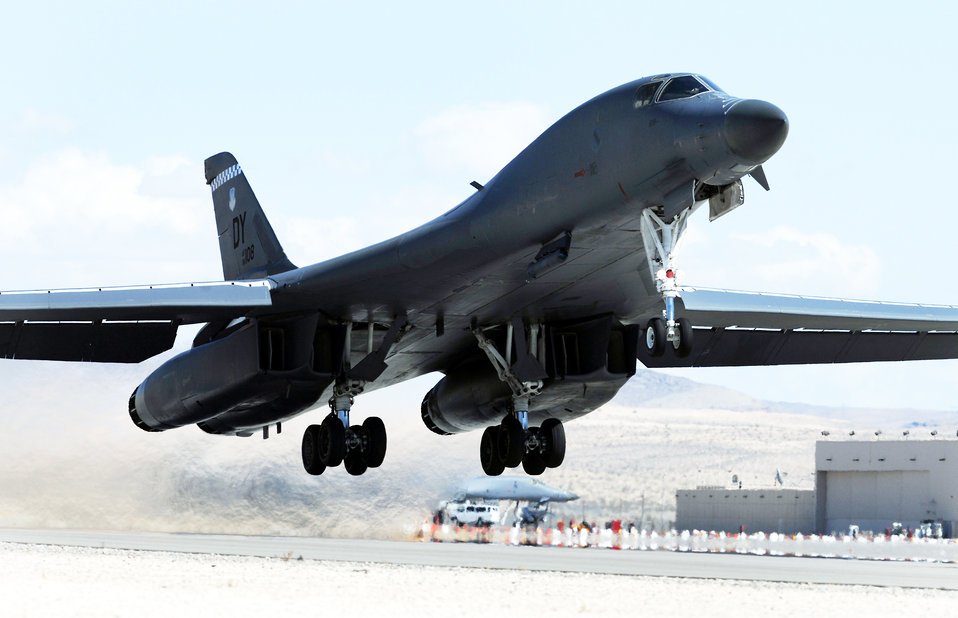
Bombers away

A B-1 Lancer assigned to 7th Operations Group at Dyess Air Force Base, Texas, departs for a training mission March 3, 2010 at Red Flag 10-3, at Nellis AFB, Nev. Red Flag is a realistic combat training exercise involving the air forces of the United States and its allies. The exercise is conducted on the 15,000-square-mile Nevada Test and Training Range, north of Las Vegas.